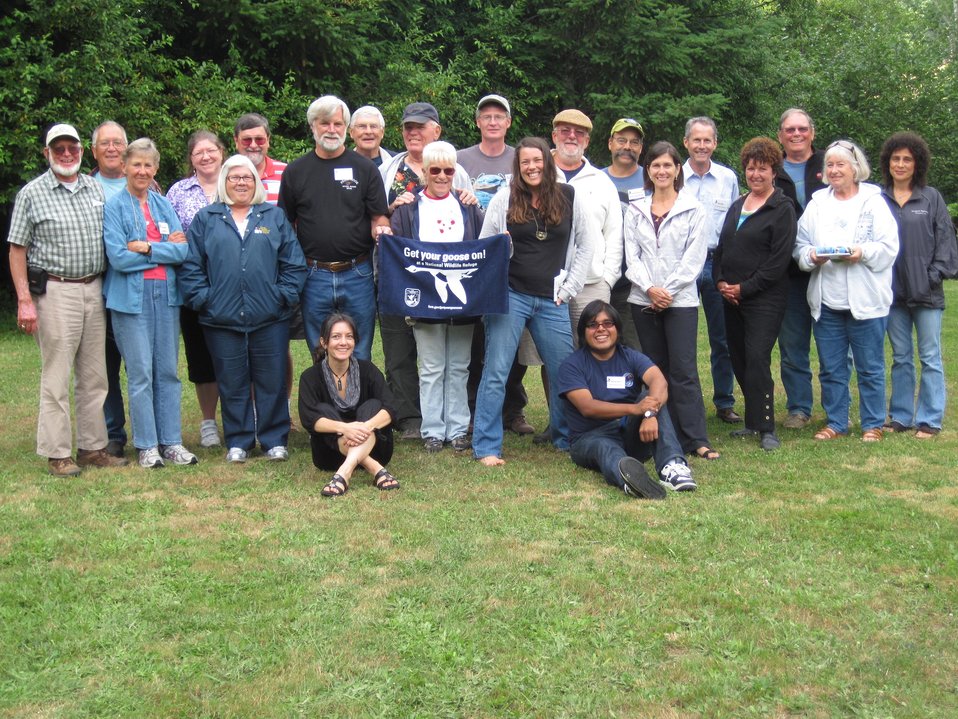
USFWS Volunteers GYGO!

USFWS Volunteers and Refuge Staff Get Their Goose On!